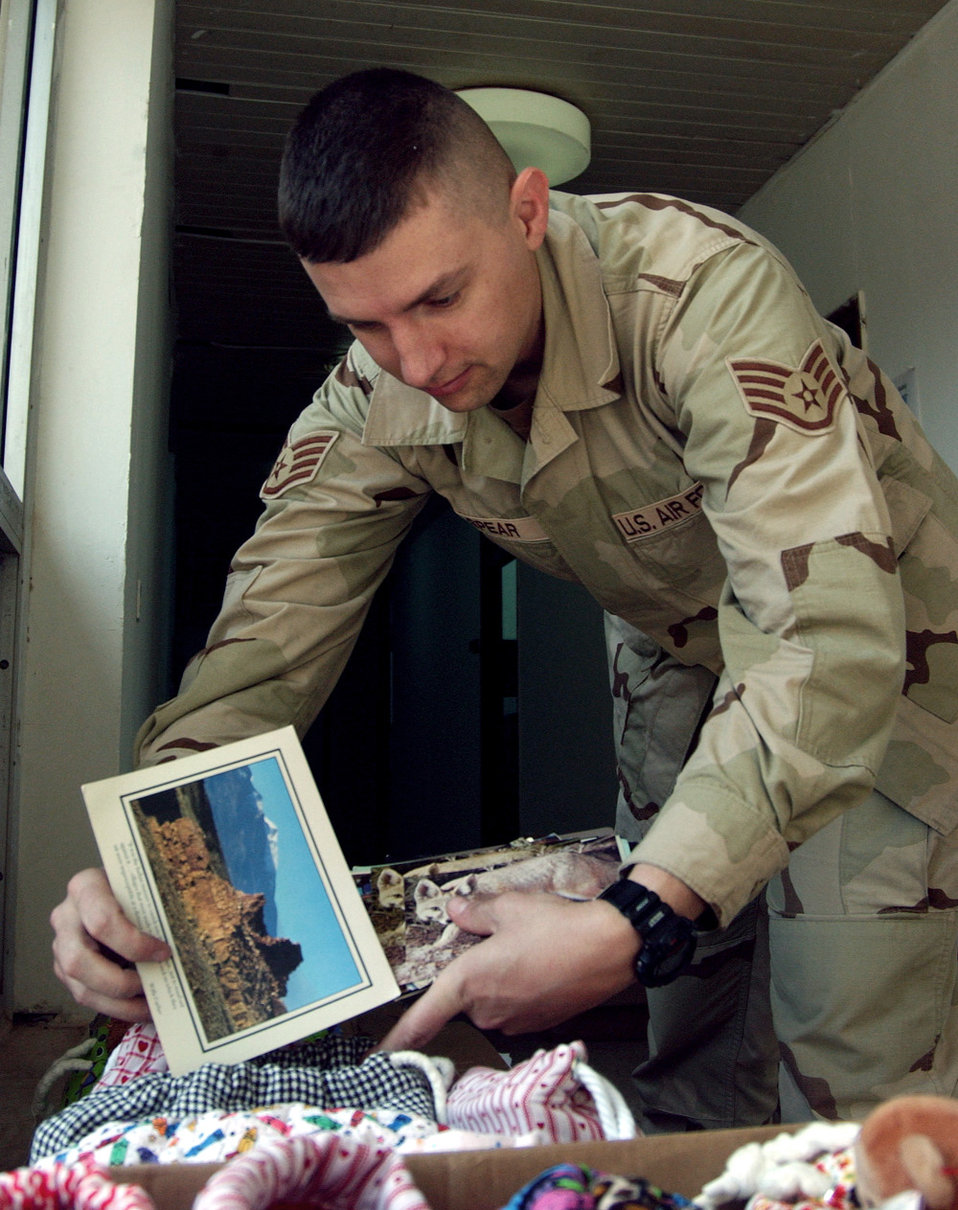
Gifts from America

BALAD AIR BASE, Iraq -- Staff Sgt. Troy Spear puts post cards into bags of school supplies to be given to Iraqi children during a humanitarian mission to a small village near here. About 30 Airmen and Soldiers traveled to the village to hand out school supplies and toys to the children collected by children from several schools in Florida. Sergeant Spear is assigned to the 332nd Expeditionary Operations Support Squadron.